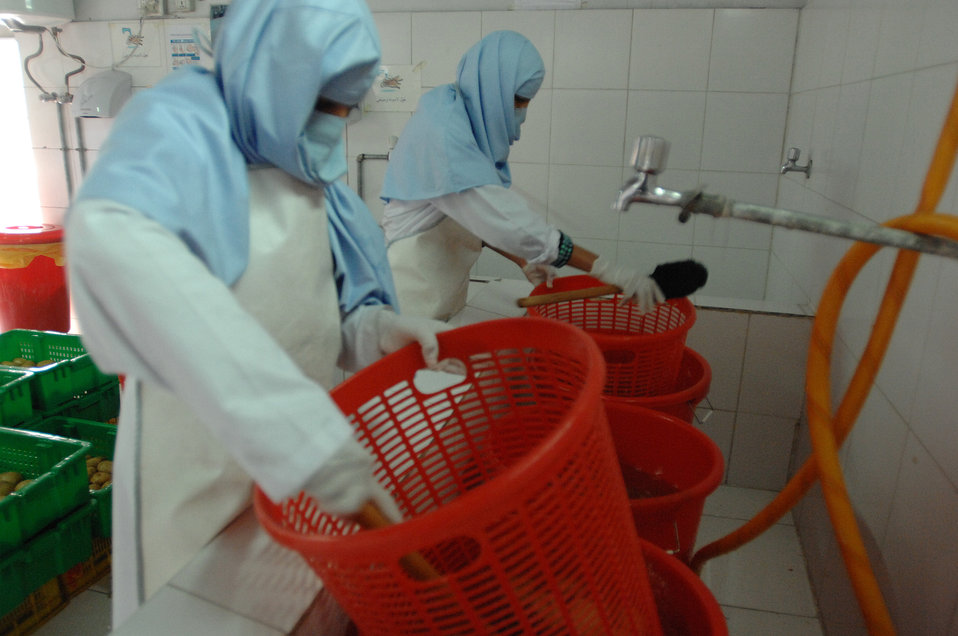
110209sv Shah238

Women triple-wash potatoes at the Surkh Rod vegetable packing facility in Nangarhar province on Wednesday, February 9, 2011. (S.K. Vemmer/Department of State)